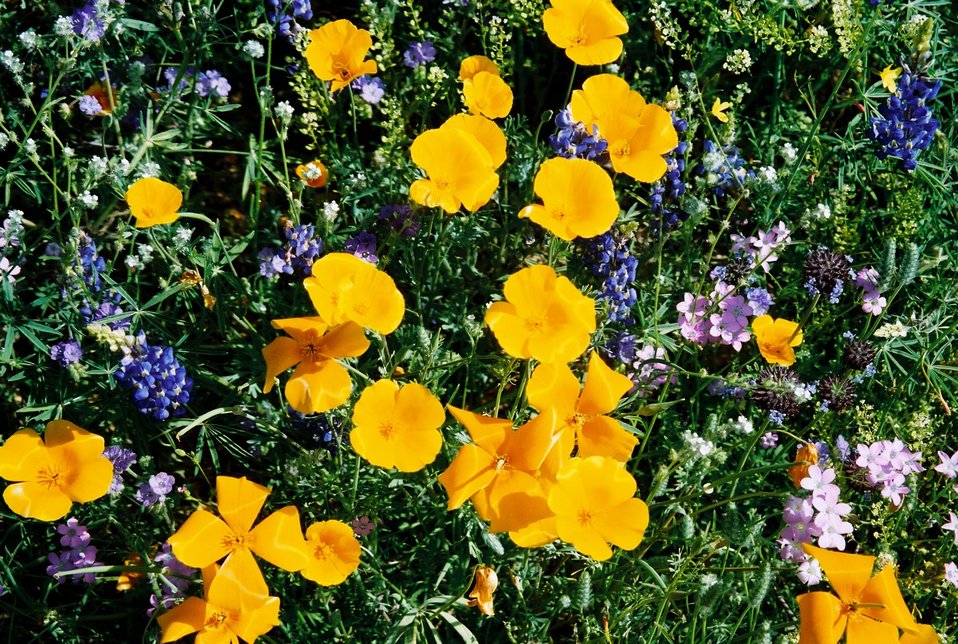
Many different kinds of beautiful wildflowers grow in the Agua Fria National Monument.